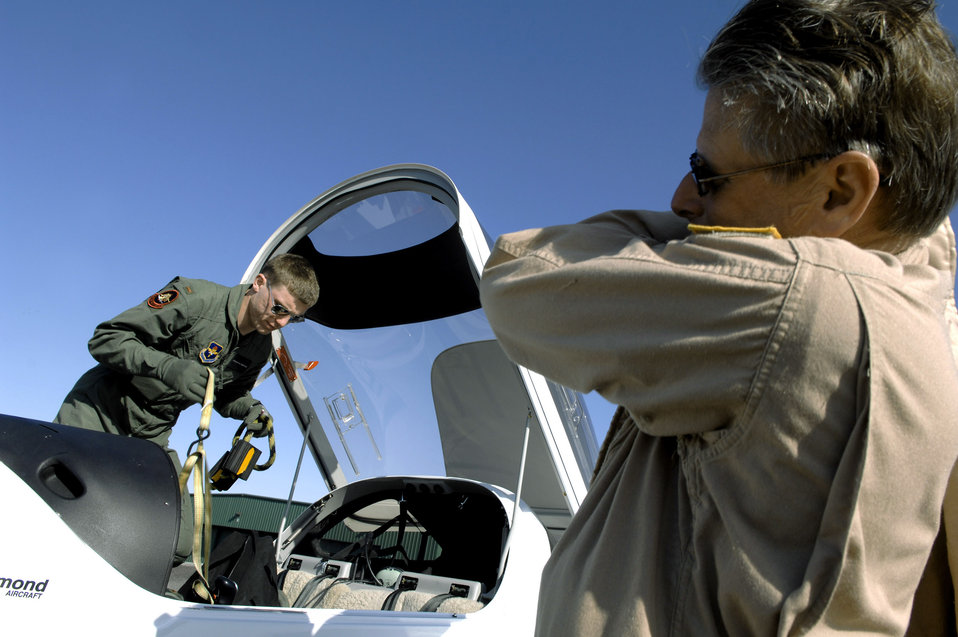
Making a pilot

Student pilot 2nd Lt. Brandon Magnuson deplanes from a DA-20 aircraft after performing his first solo flight with instructor pilot Greg Dotter April 7 in Pueblo, Colo. The Doss Aviation Initial Flight Screening Course held there is used to screen Air Force aviation candidates and develop student's aviation skills.